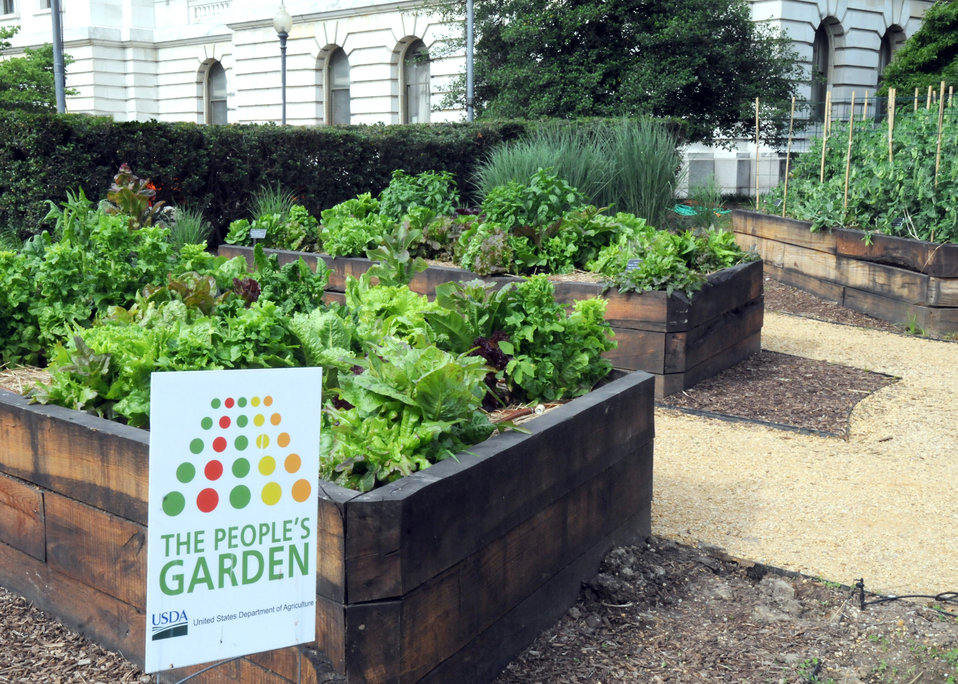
On Friday, May 28, 2010 the Department of Agriculture People’s Garden in Washington, DC, is ready for the harvesting of its first crop of vegetables (peas, lettuces, beets, kohlrabi, and turnip greens). On Thursday, June 10, 2010. USDA photo 10di1383-15